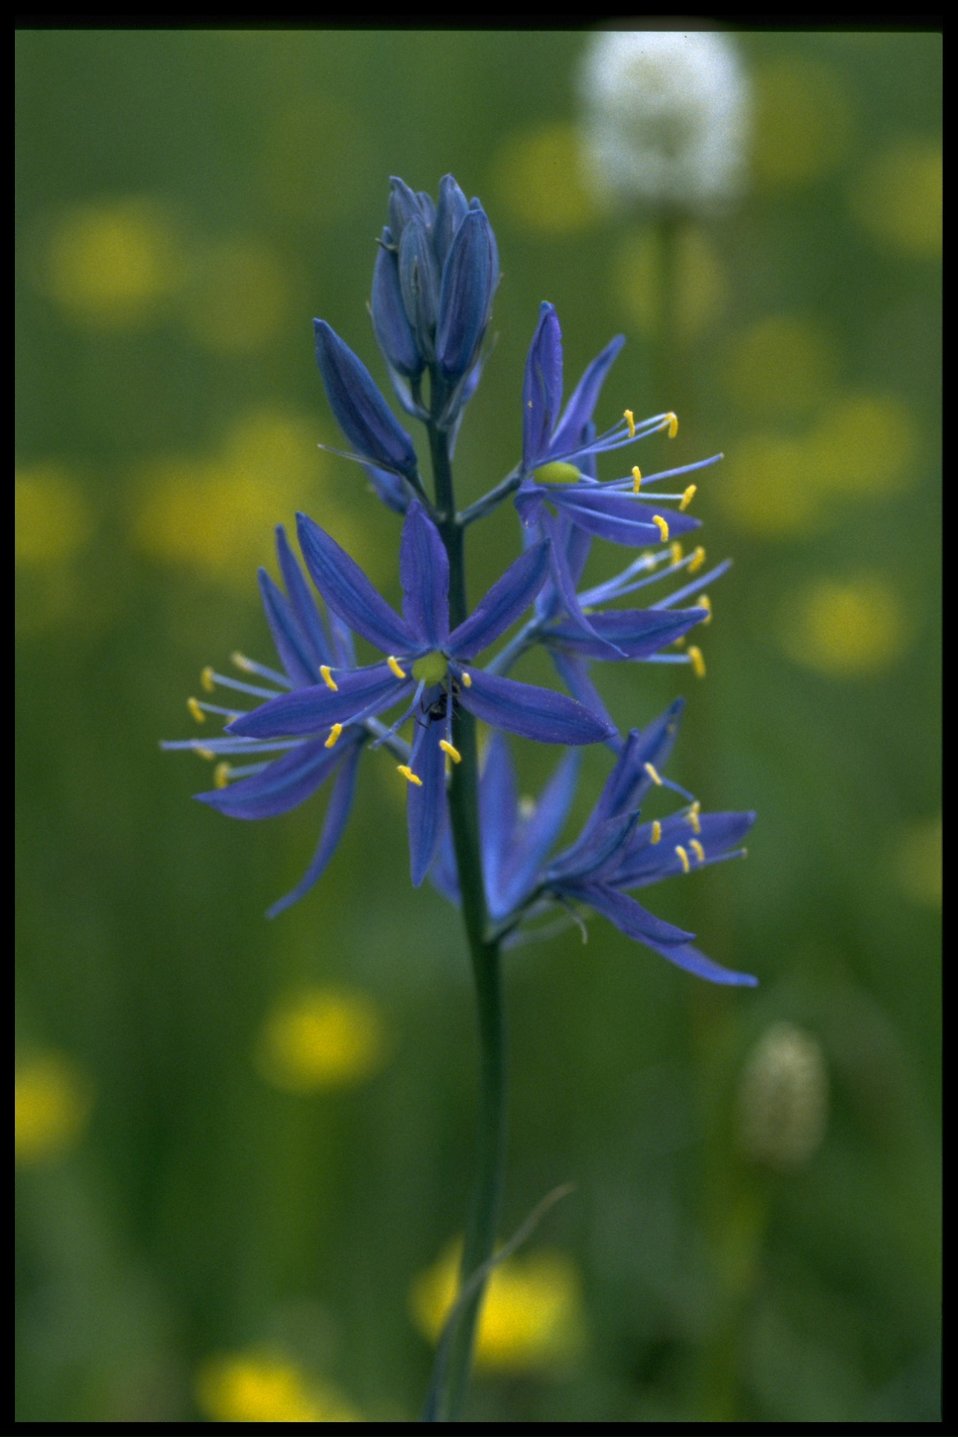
Closeup shot of small camas (Camassia quamash).